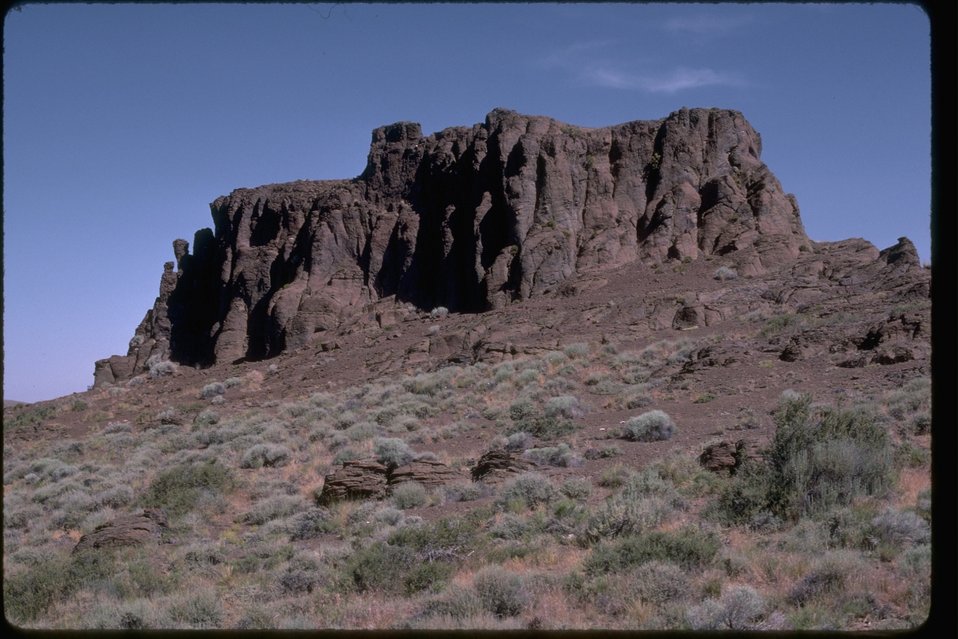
Rock formation on ridge near Willow Creek Wilderness Study Area. OR 3-152